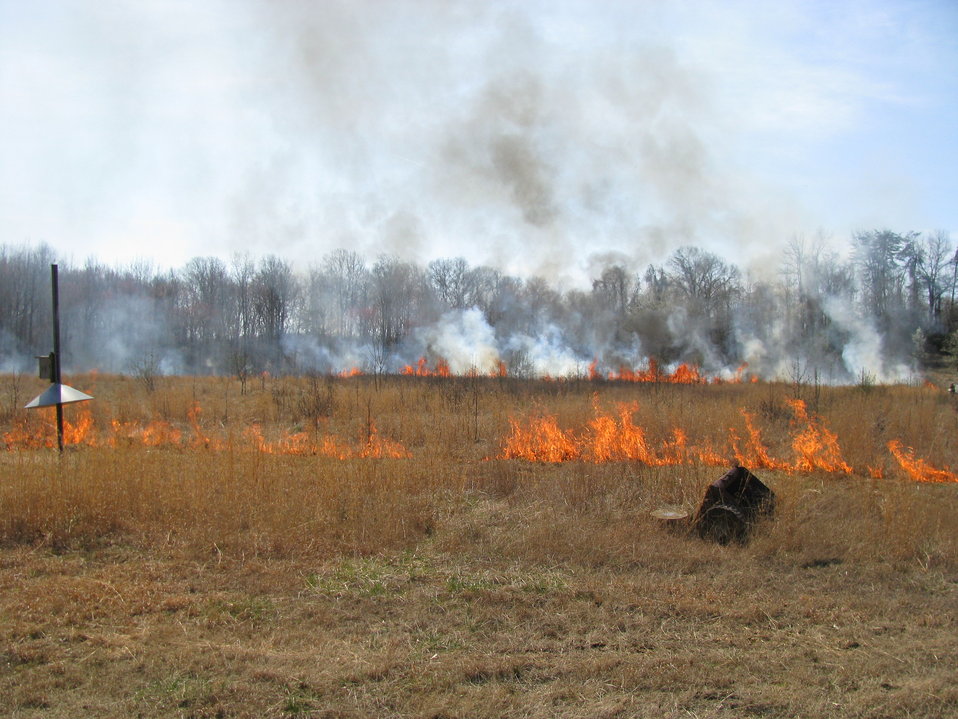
Burning to Promote Wildlife Habitat

Laurel, Maryland, April 14, 2012: Smoke rises straight up from a controlled burn in grassland. The burn, at Patuxent Research Refuge, was to maintain native grasslands, remove woody vegetation, and control invasive species such as Korean Lespedeza.